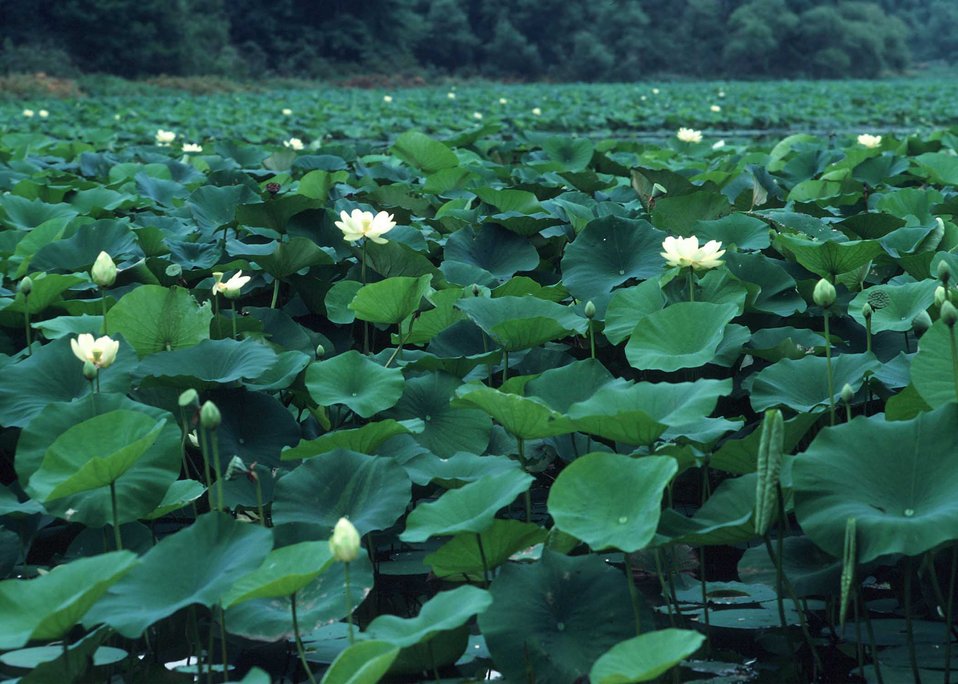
Lotus plants provide valuable wildlife habitat on Maryland's eastern Shore.